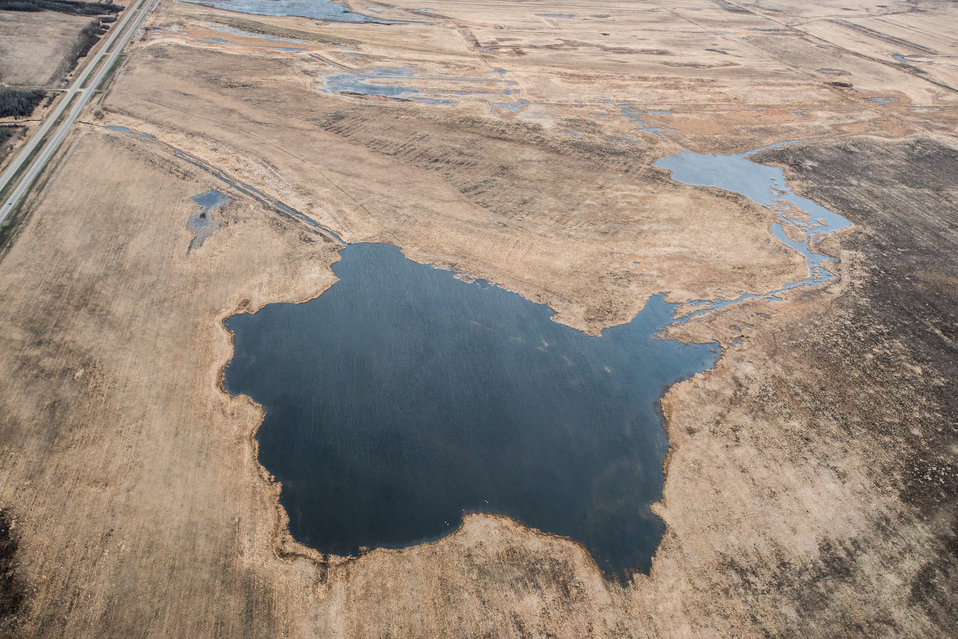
Glacial Ridge National Wildlife Refuge with U.S. Department of Agriculture (USDA) Natural Resources Conservation Service (NRCS) Wetland Reserve Program and Public Law PL83-566 Small Watershed Program participants in Polk County, MN, on Tuesday, April 30, 2013.